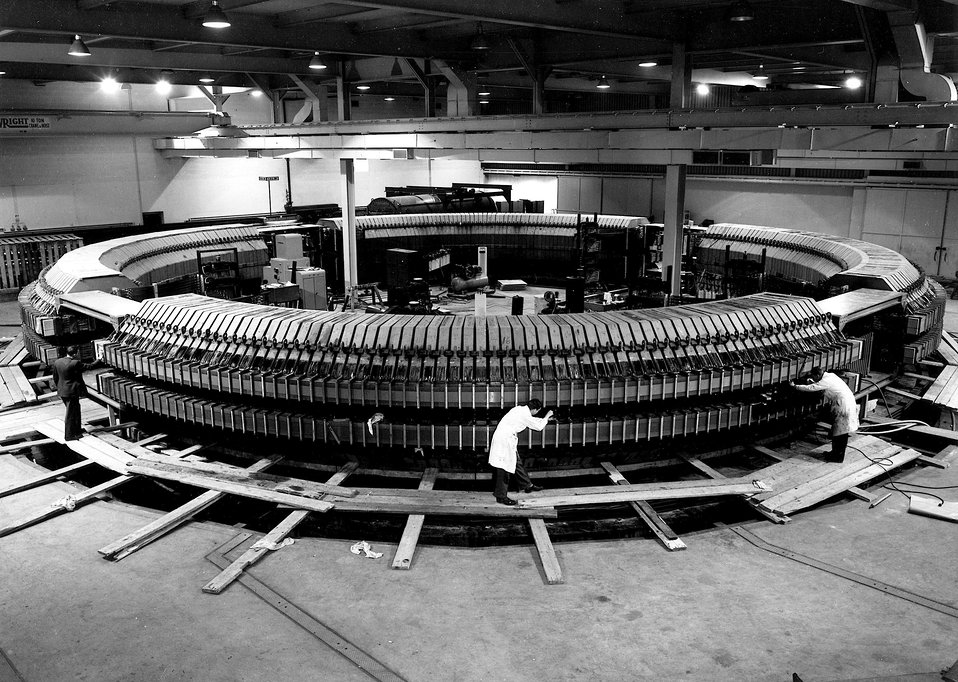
General view of Cosmotron showing final adjustments
to installation of main coil.